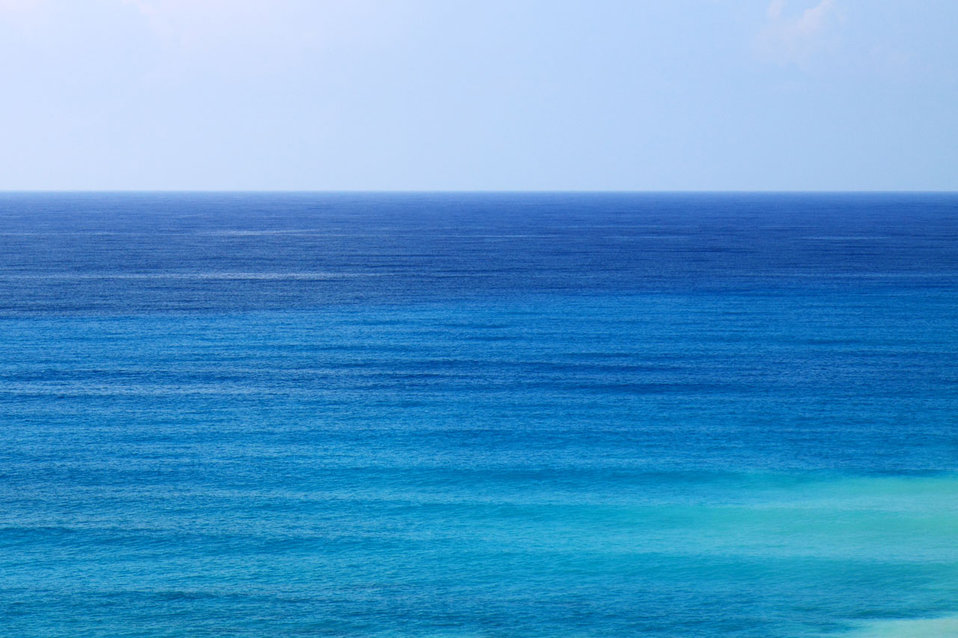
Blue sea water background image.